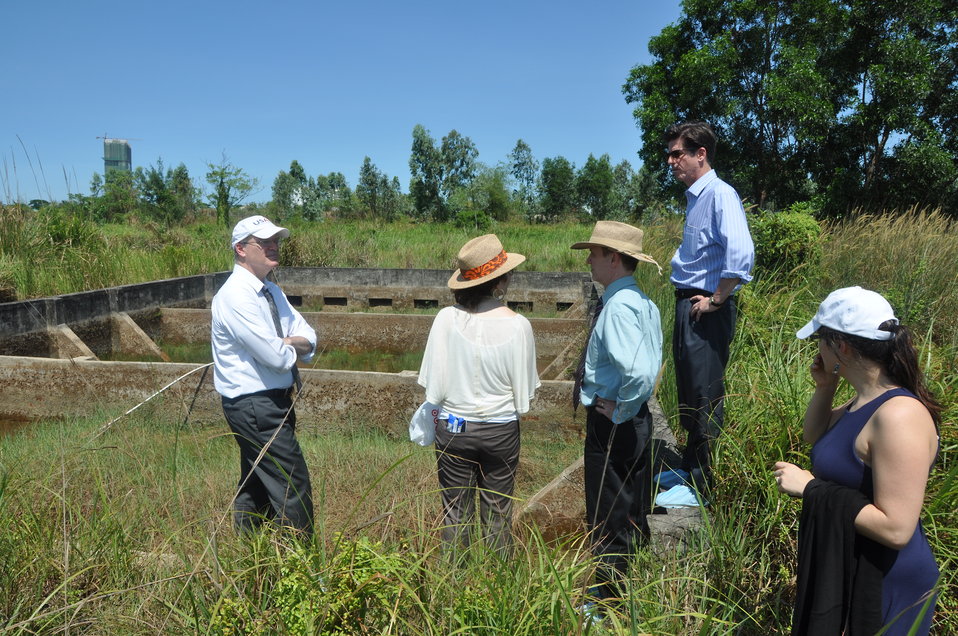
USAID Deputy Administrator Donald Steinberg and delegation visit Danang Airport

USAID Deputy Administrator Donald Steinberg Visits Vietnam